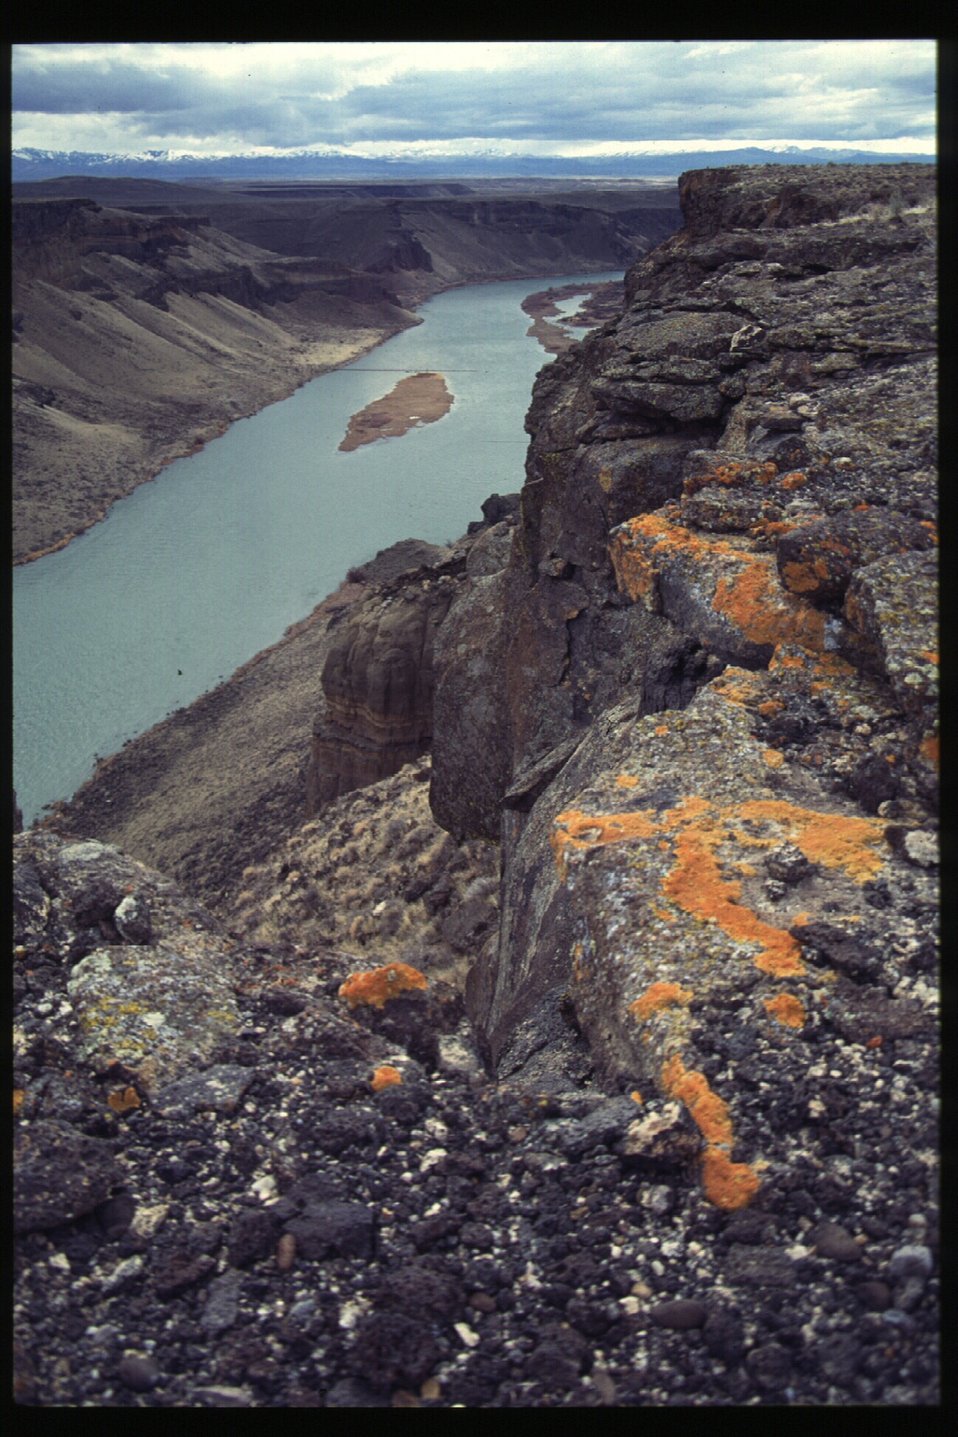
Orange lichen Snake River Canyon Owyhee Field Office LSRD Lower Snake River District